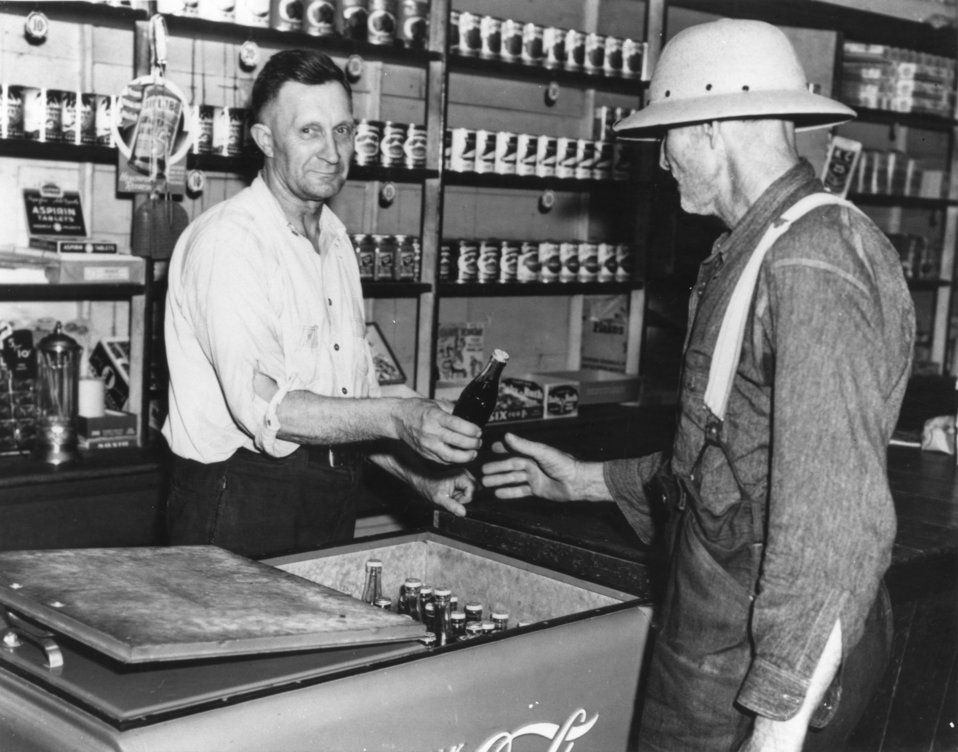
Early settlers at Oak Ridge